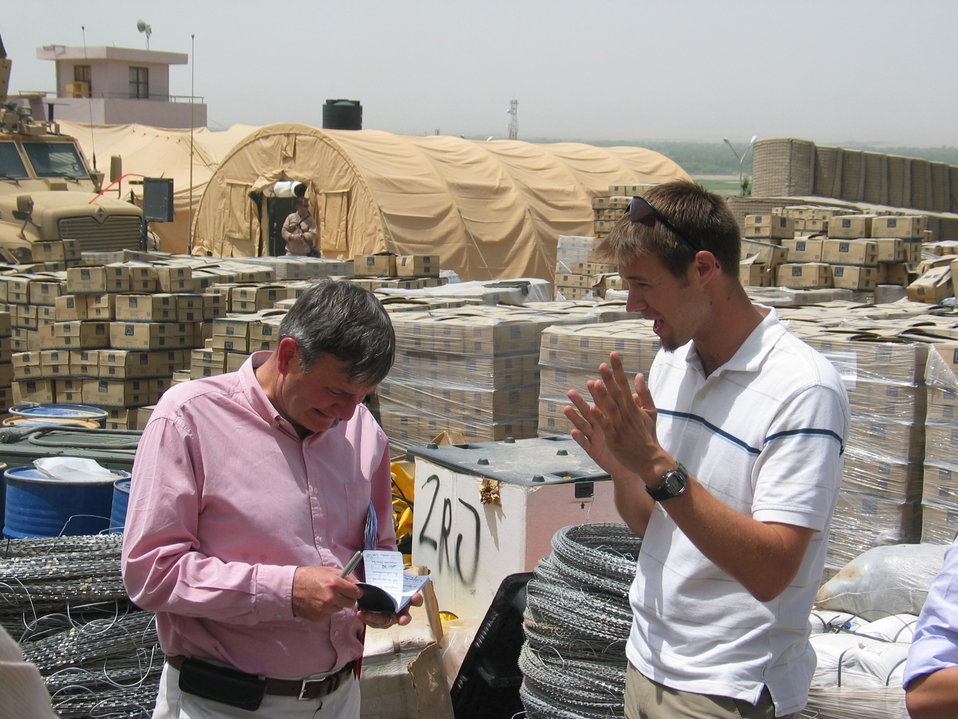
CODEL Berman